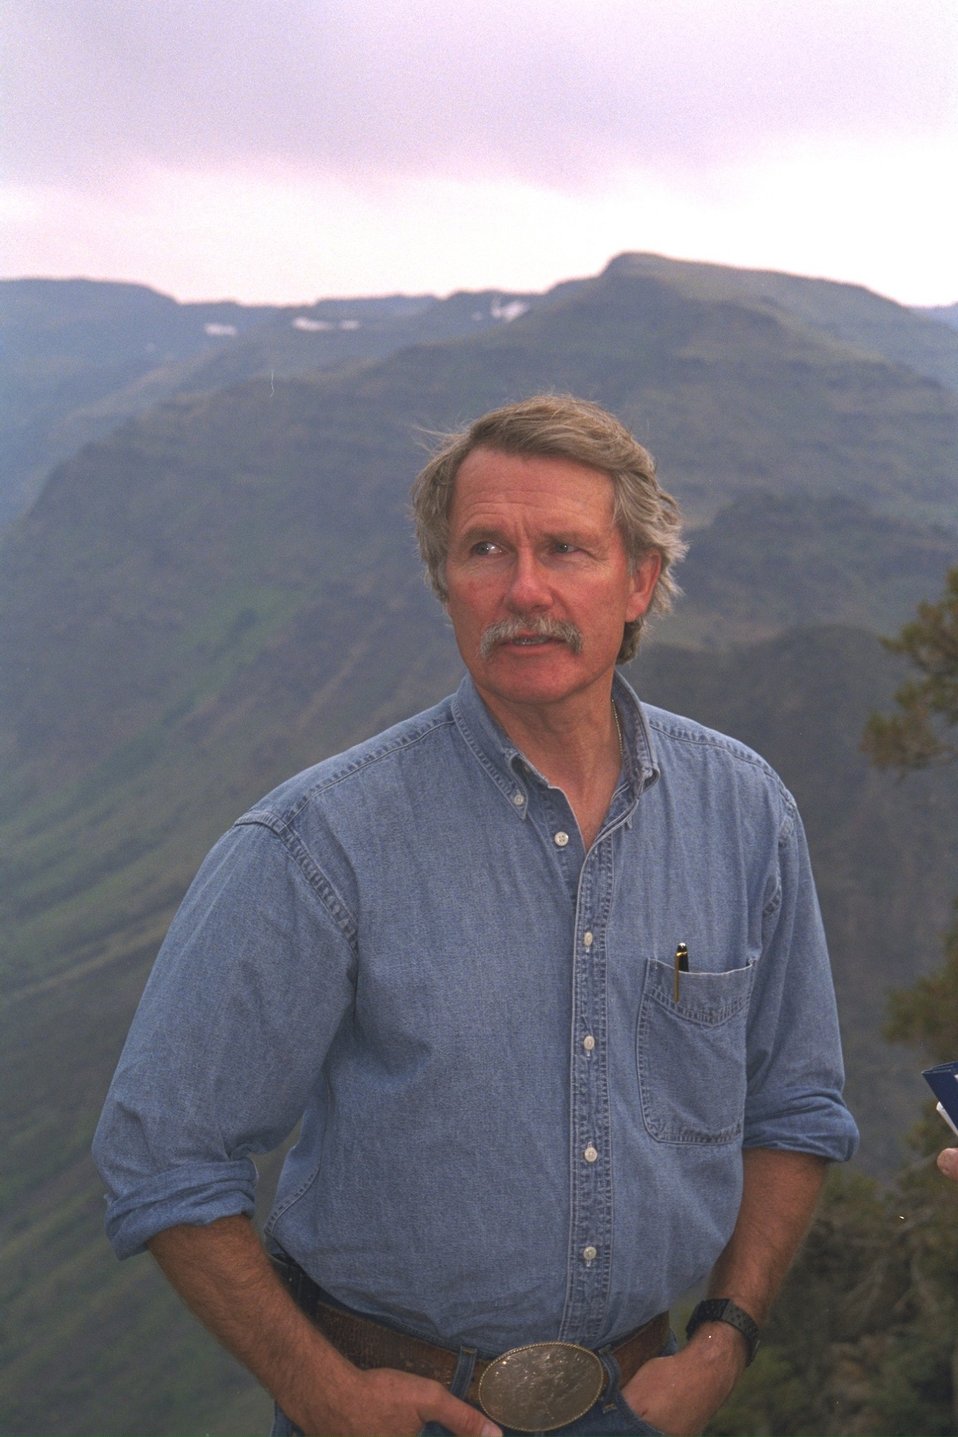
Governor Kitzhaber at Big Indian Gorge overlook.